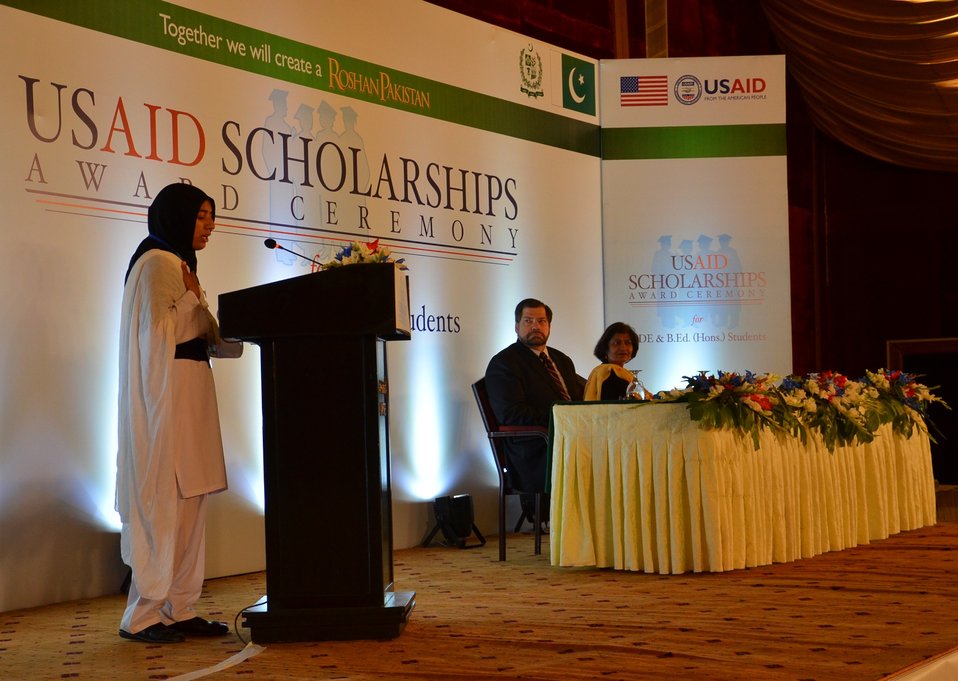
ADE student during ceremony